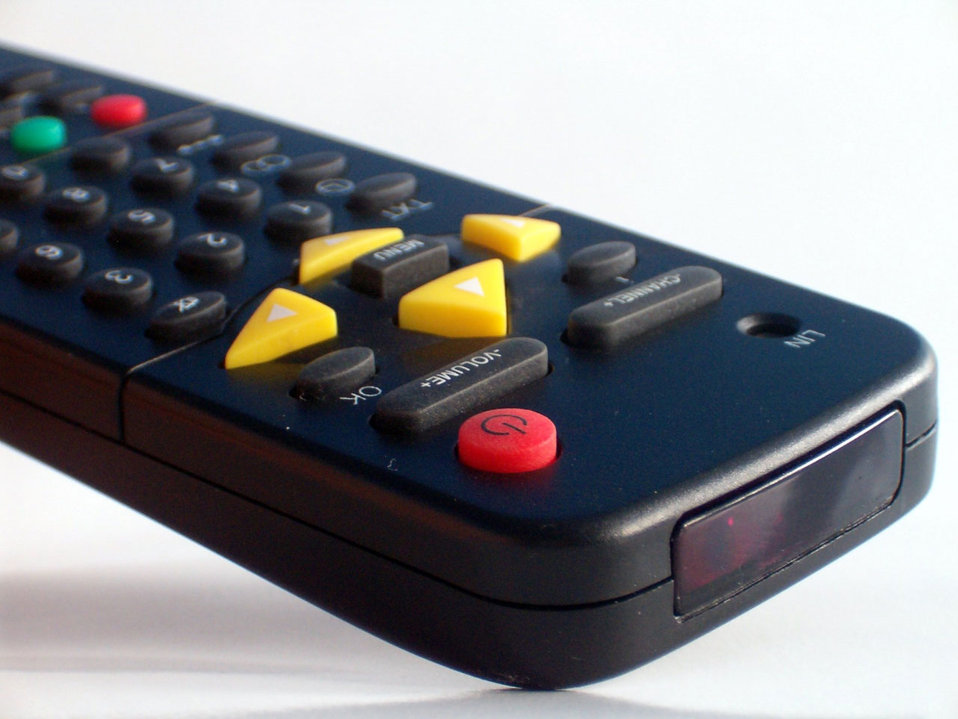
Remote controller

Tv remote controller.